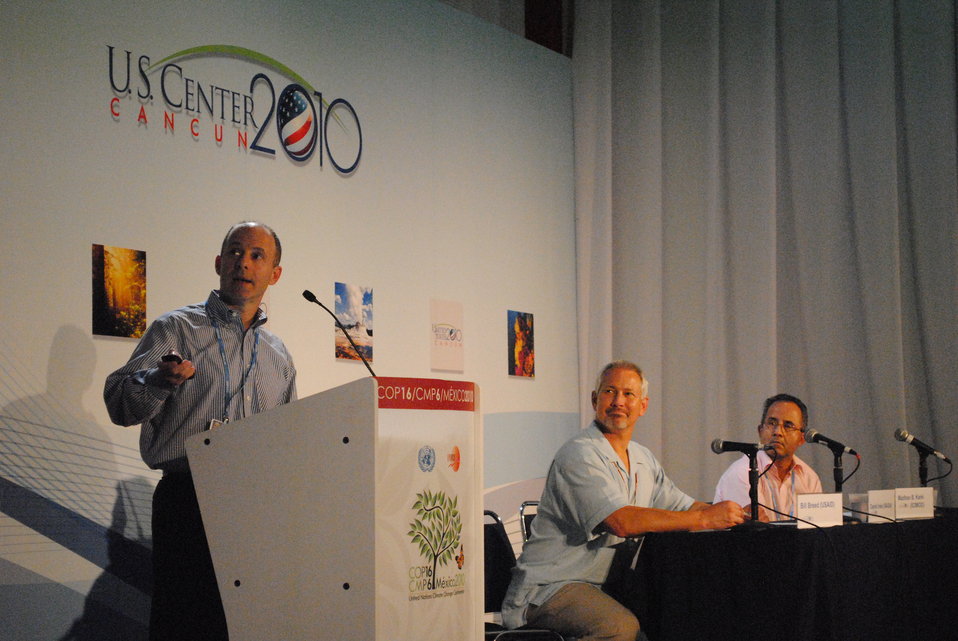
NASÄ's Daniel Irwin Showcases the SERVIR Project

Daniel Irwin of NASA explains the SERVIR Project at a side event at the U.S. Center at COP-16 in Cancun, Mexico, on December 2, 2010.